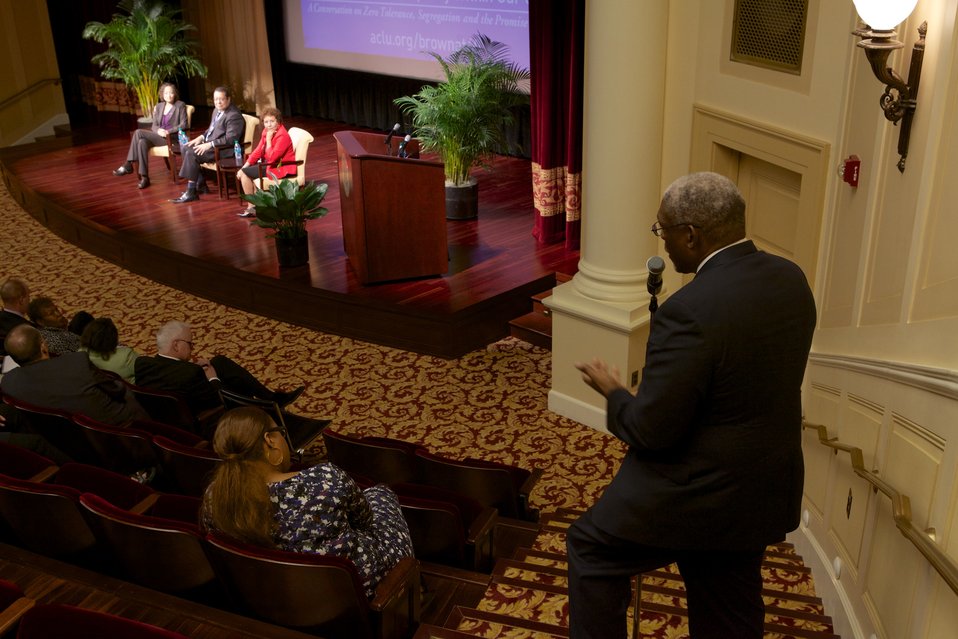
Brown at 60: Is Full Equality Within Our Grasp? A Conversation on Zero Tolerance, Segregation, and the Promise of Justice